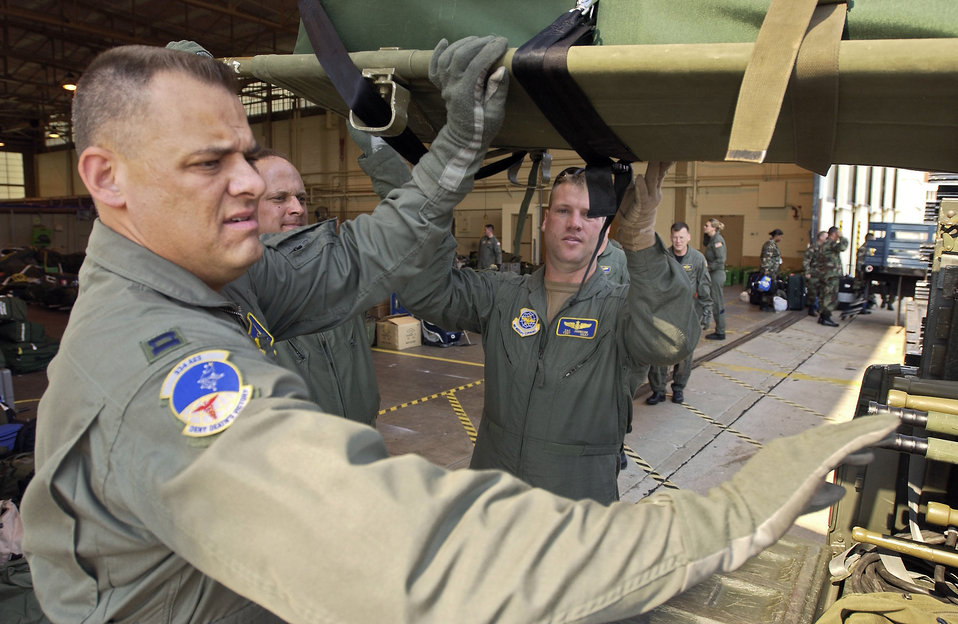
Reservists charge into aeromedical evacuation effort

SAN ANTONIO -- Airmen with the 934th Aeromedical Evacuation Squadron lift a litter into a truck before leaving here on a mission to the Gulf Coast. The Airmen from the 934th AES comprised an aeromedical evacuation team that flew from Texas to New Orleans, later dropping patients off at locations nationwide.